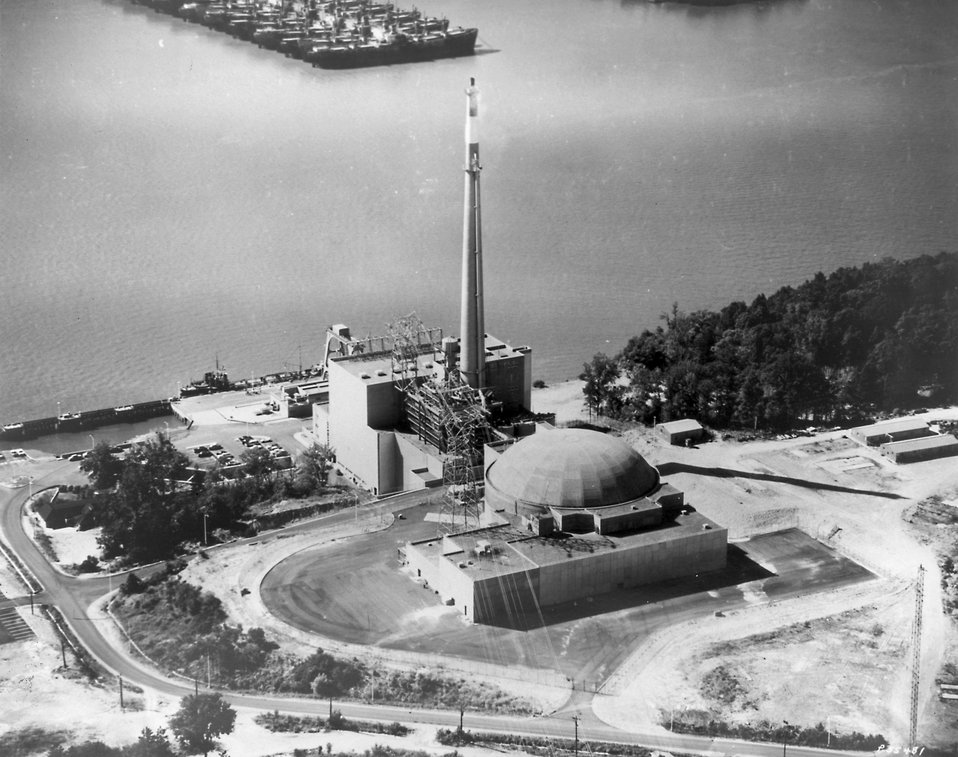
Consolidated Edison's Indian Point nuclear power station is located on the Hudson River about 24 miles north of New York City. The station became operable August 7, 1962. Circa 1963.